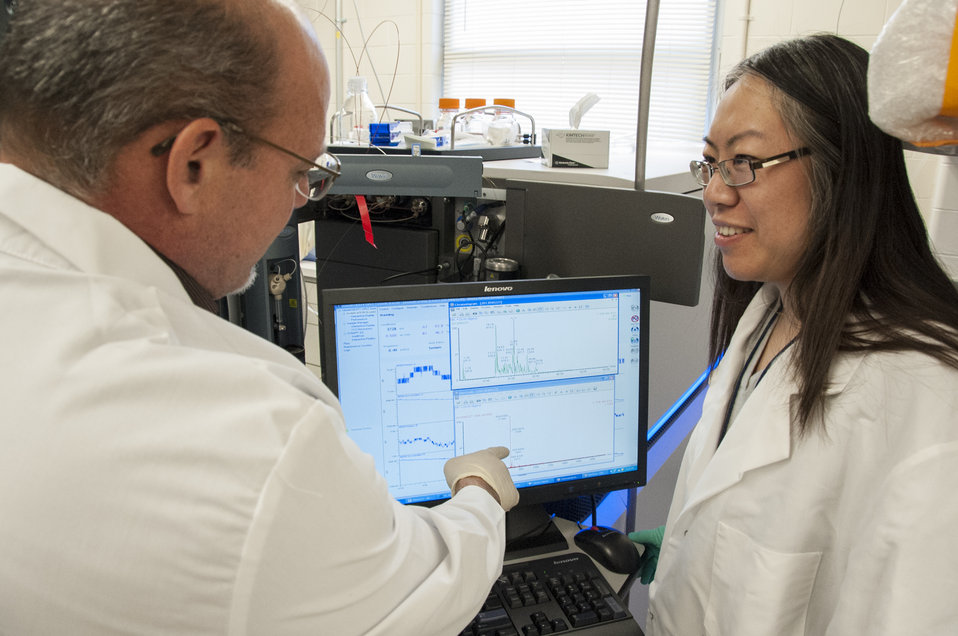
Bio Threats: FDA's A-Team (6309)

Senior staff scientist John F. Cipollo, Ph.D., and analytical chemist Yanming An, Ph.D., use mass spectrometry technology to analyze glycoconjugates- carbohydrates bonded to either a fat molecule or a protein. They've proven valuable in vaccines used to treat meningitis, pneumonia and blood infections. The scientists hope to discover molecules that will lead to the development of new vaccines.

Scientists at FDA’s Center for Biologics Evaluation and Research (CBER) work to facilitate the development of safe, effective treatments that would neutralize biological threats to public health and security. CBER regulates preventive and therapeutic vaccines, blood and blood products, human cell and tissue-based products, gene therapies and xenotransplantation. To learn more, read this FDA Consumer Update:

• FDA Teams Prepare for Biological Threats